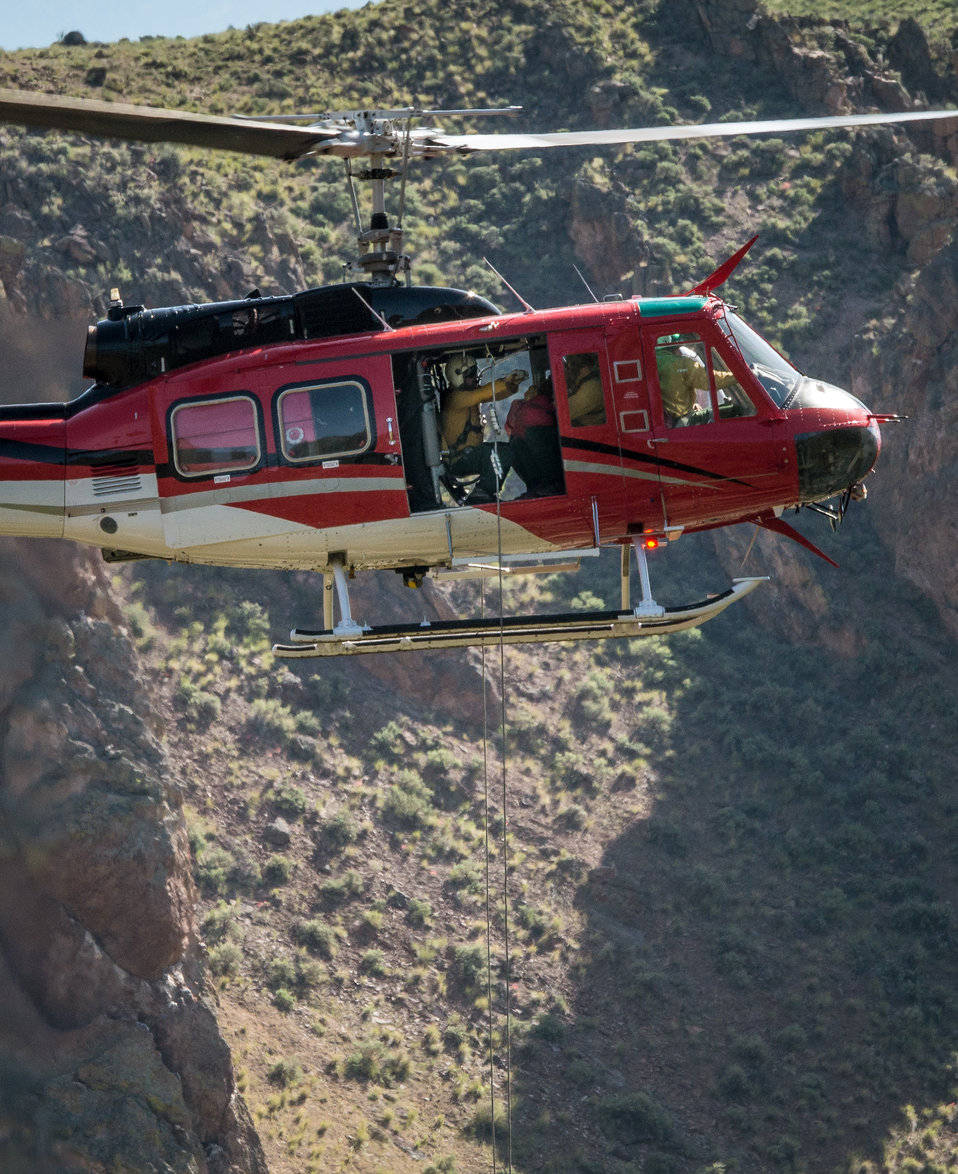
A spotter gives a hand signal to four veteran wildland firefighter rappellers inside the Heligroup Fire's Bell 205A-1 helicopter while hovering over the rappeller landing zone in the Perreau Creek area at the U.S. Department of Agriculture (USDA) U.S. Forest Service (USFS) National Helicopter Rappel Program’s Rappel Academy at Salmon Air Base in Salmon, ID on Thursday, May 15, 2014. From May 12, 2014, 72 veteran rappellers from all over the nation, 30 support staff, and three helicopters with flight crews attend the training at Salmon Air Base. Participants will rappel into the Perreau Creek area. The annual training is delivered in accordance with the National Rappel Operations Guide; strengthen leadership, teamwork, and communications within the rappel community, and produces quality aerial delivered firefighters for use in fire and aviation operations. The USDA Forest Service National Helicopter Rappel Program’s primary mission is initial attack. Rappel crews may be utilized for large fire support, all hazard incident operations, and resource management objectives.